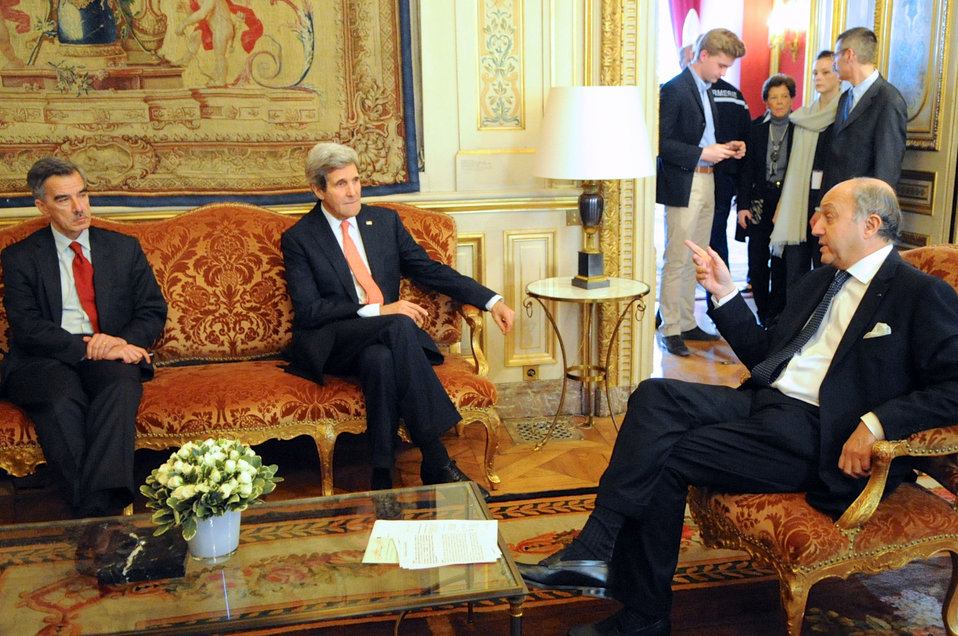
Secretary Kerry, Chargé Taplin Meet With French Foreign Minister Fabious

U.S. Secretary of State John Kerry and U.S. Chargé d'Affaires Mark Taplin meet with French Foreign Minister Laurent Fabius at the Quai d'Orsay in Paris, France, on February 19, 2014.